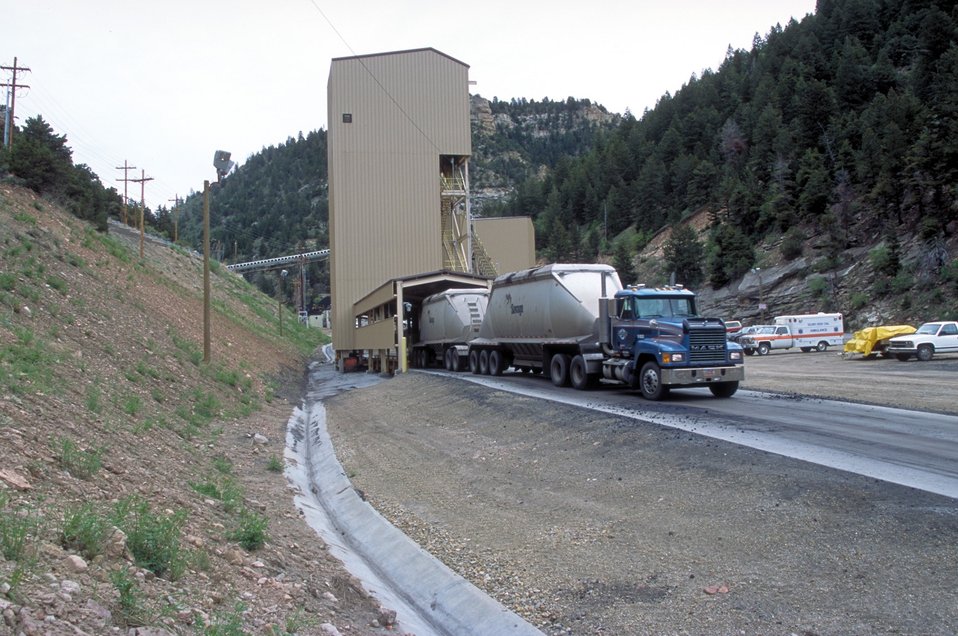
Coal production near Price, Utah.